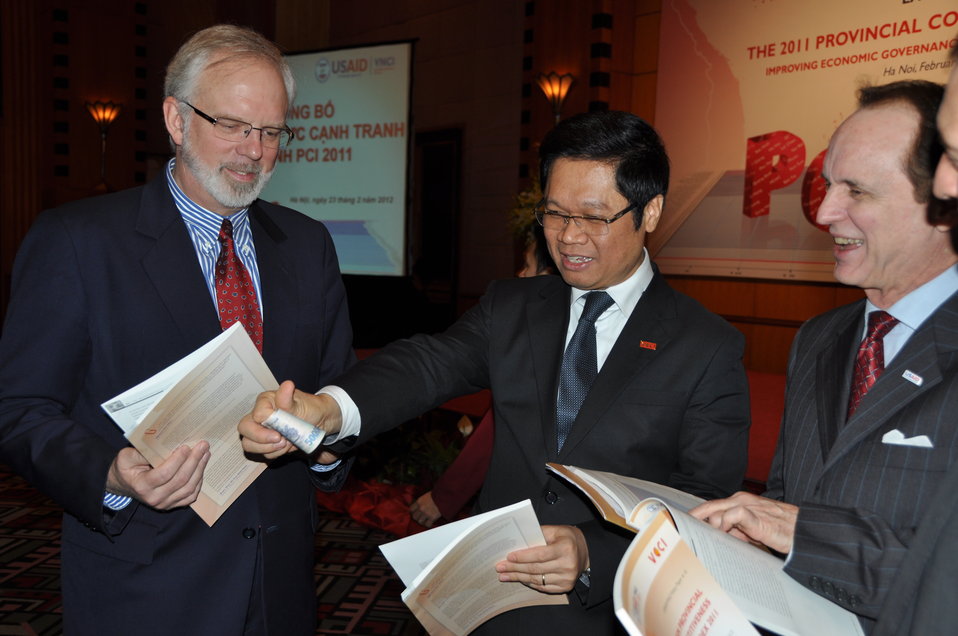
U.S. Ambassador David B. Shear at the Provincial Competitiveness Index 2011 Launch